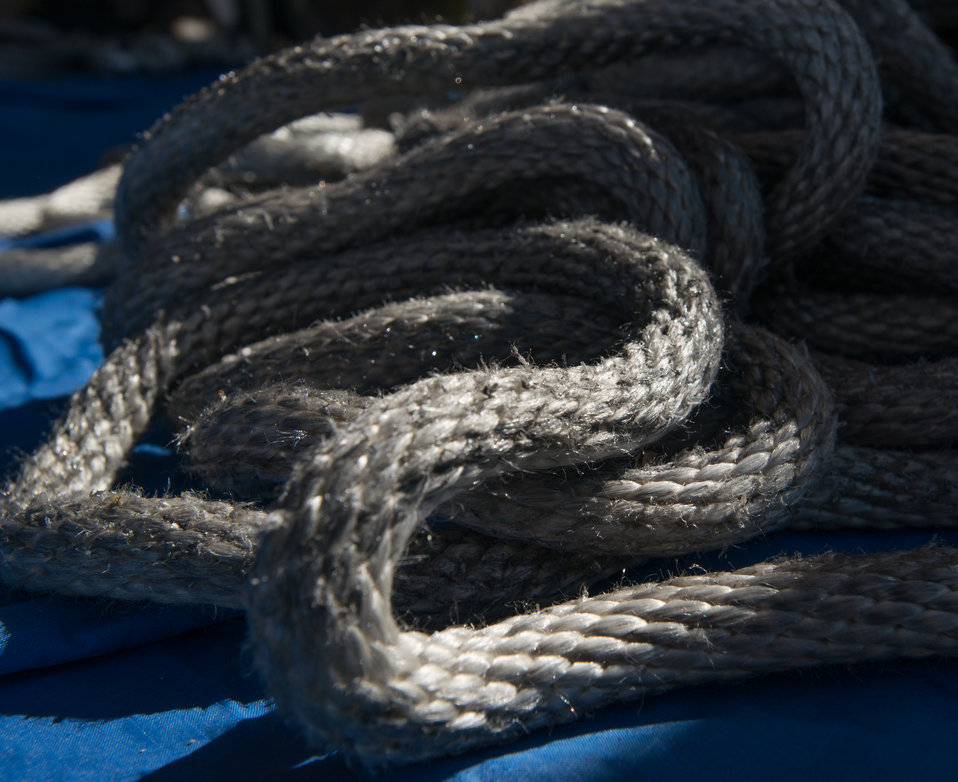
Rope is the key tool for wildland firefighter rappellers and any used for training or operational use are identified and its condition noted at the U.S. Department of Agriculture (USDA) U.S. Forest Service (USFS) National Helicopter Rappel Program’s Rappel Academy at Salmon Air Base in Salmon, ID on Wednesday, May 14, 2014. It is vital that all equipment used is safe. From May 12, 2014, 72 veteran rappellers from all over the nation, 30 support staff, and three helicopters with flight crews attend the training at Salmon Air Base. Participants will rappel into the Perreau Creek area. The annual training is delivered in accordance with the National Rappel Operations Guide; strengthen leadership, teamwork, and communications within the rappel community, and produces quality aerial delivered firefighters for use in fire and aviation operations. The USDA Forest Service National Helicopter Rappel Program’s primary mission is initial attack. Rappel crews may be utilized for large fire support, all hazard incident operations, and resource management objectives.